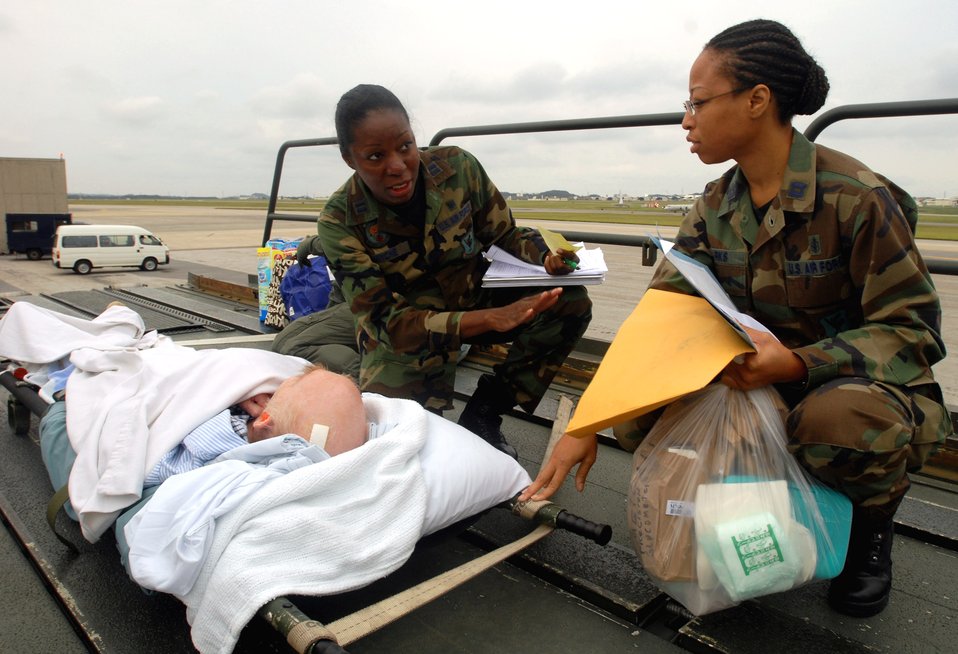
Kadena Airmen aerovac patients in need

Capt. Michelle Wyche and Capt. Wanda Parks assess a patient flown in Dec. 18 from Yokota Air Base, Japan. Captains Wyche and Parks are from the 18th Aerospace
Medicine Squadron. The patient will stay at the Camp Lester Naval Hospital for the night to receive critical care before being transported to Travis Air Force Base, Calif., for further treatment. Members of the 18th AES travel throughout the Pacific picking up critical patients and transporting them to hospitals that can meet their needs.